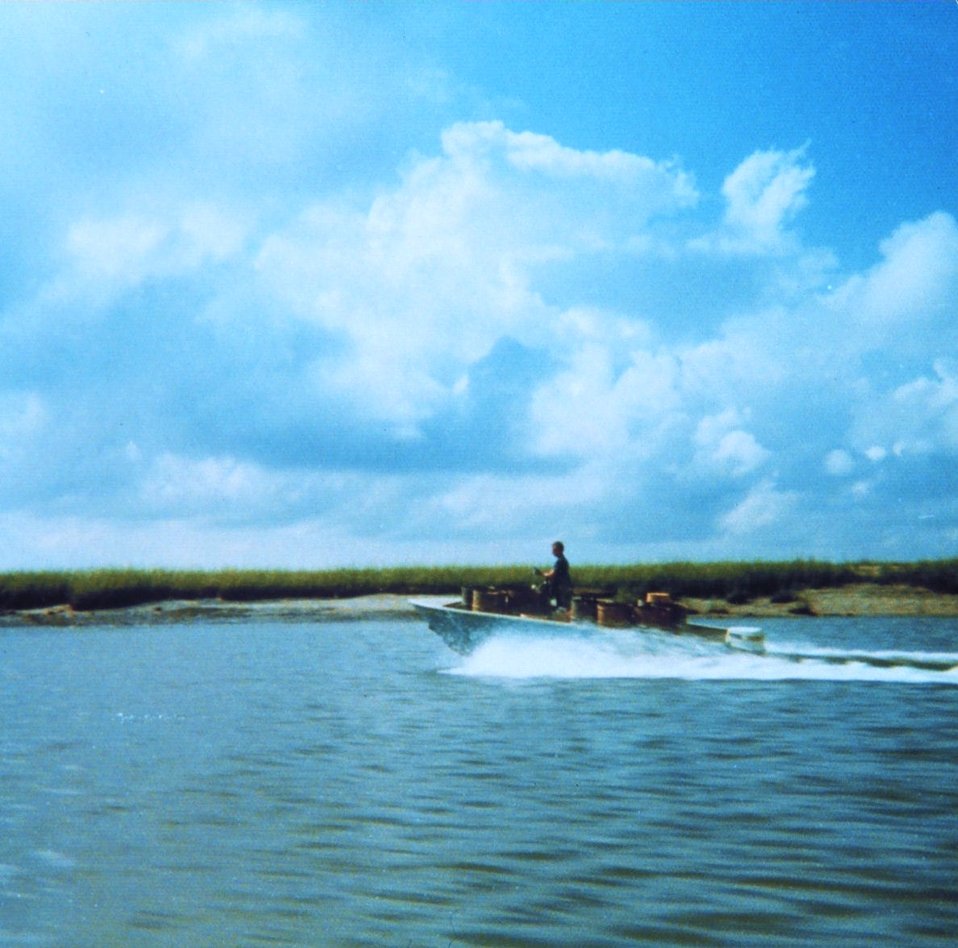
A waterman going to work in Wassaw Sound